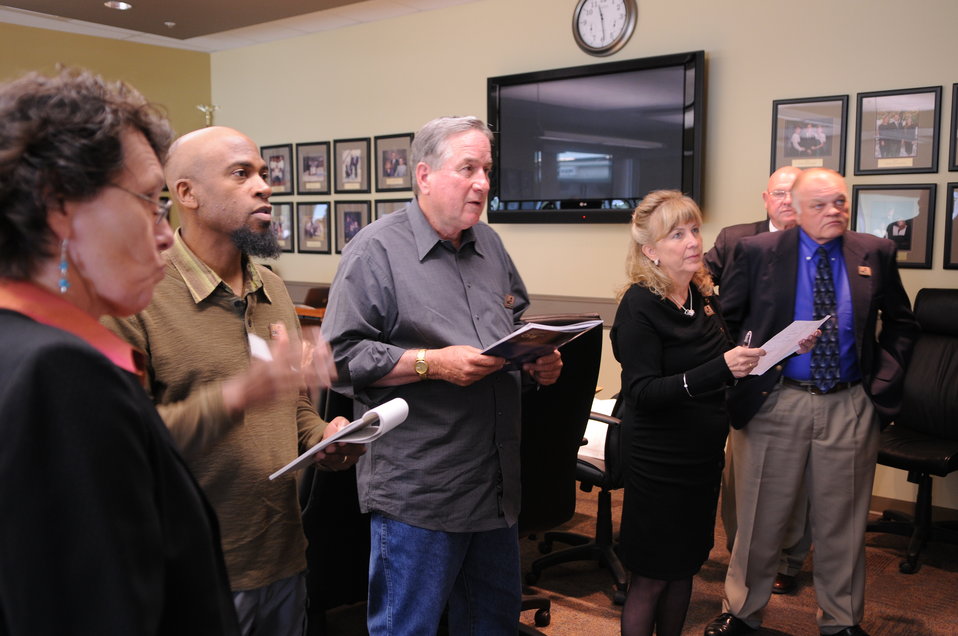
Judging

The U.S. Fish & Wildlife Service sponsored the 2012 Federal Duck Stamp Art Contest September 28 and 29 in Ogden, Utah, at Weber State University. A panel of five judges was responsible for choosing the art work used to design the 2013-2014 Migratory Bird Hunting and Conservation Stamp.